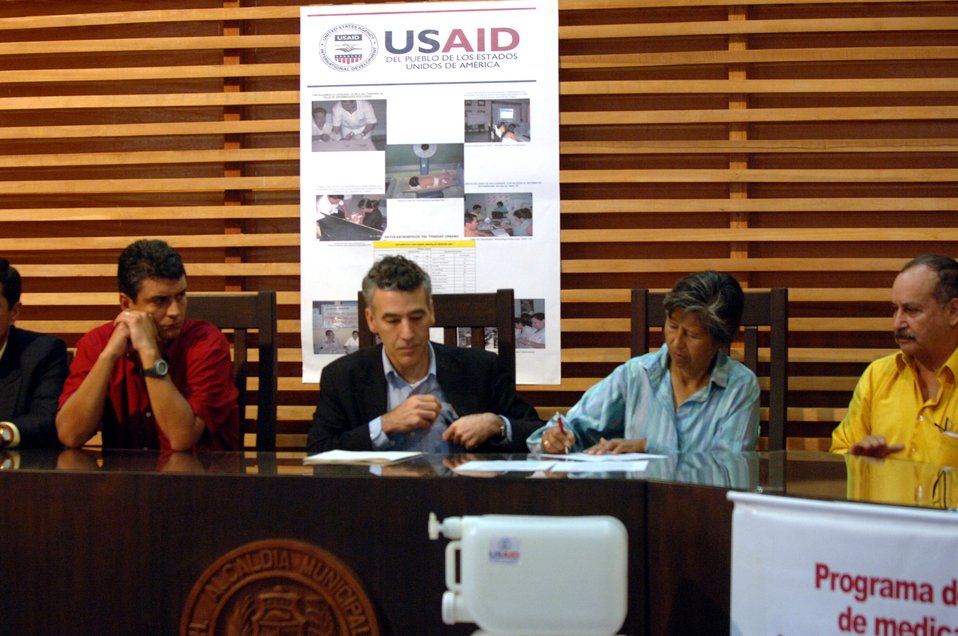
Flooded Bolivia gets humanitarian relief

Philip S. Goldberg, the U.S. Ambassador to Bolivia, and Nilda Heredia, the Bolivian Minister of Health, sign an agreement March 5 in Trinidad, Bolivia to expand the vaccination and distribution of medical supplies in times of crisis. U.S. Southern Command, in cooperation with the U.S. Agency for International Development, is delivering humanitarian supplies in response to devastating floods in Eastern Bolivia.